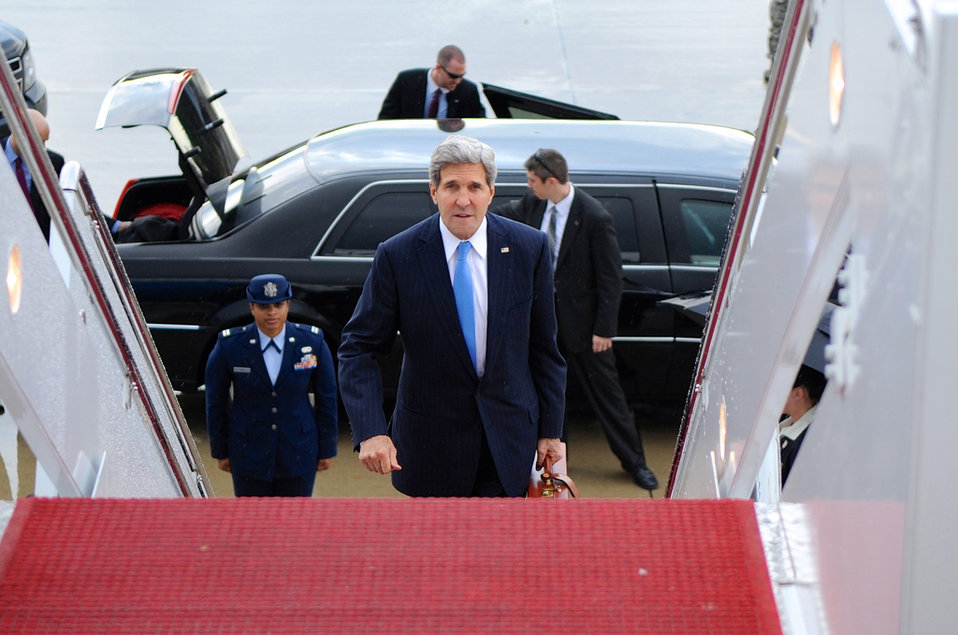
Secretary Kerry Sets Out On 11-Day Trip

U.S. Secretary of State John Kerry climbs the steps to his jet at Andrews Air Force Base, at the outset of an 11-day trip to Northern Africa, Europe, the Middle East, Saudi Arabia, and the United Arab Emirates, on November 2, 2013.